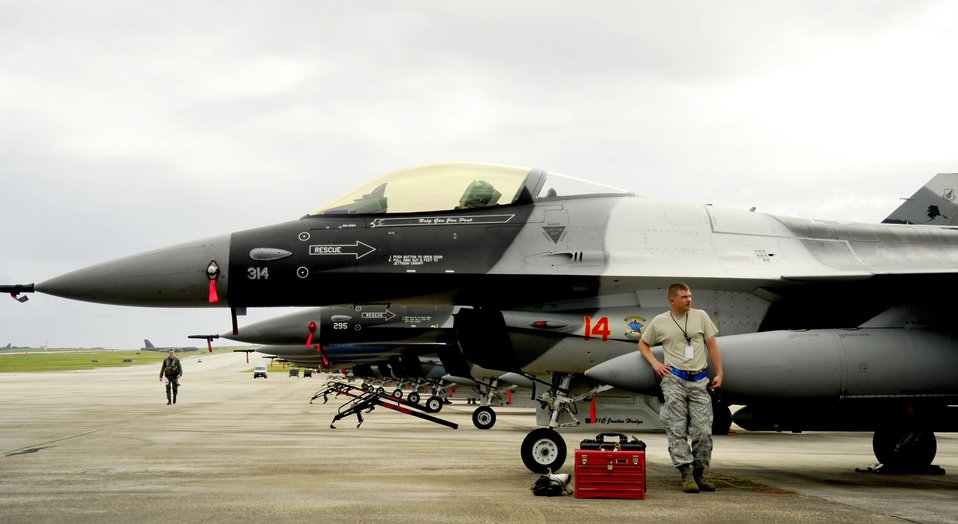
Airmen participate in exercise Cope North

A maintainer takes a break before continuing his job on an F-16 Fighting Falcon Feb. 21, 2011, during exercise Cope North at Andersen Air Force Base, Guam.